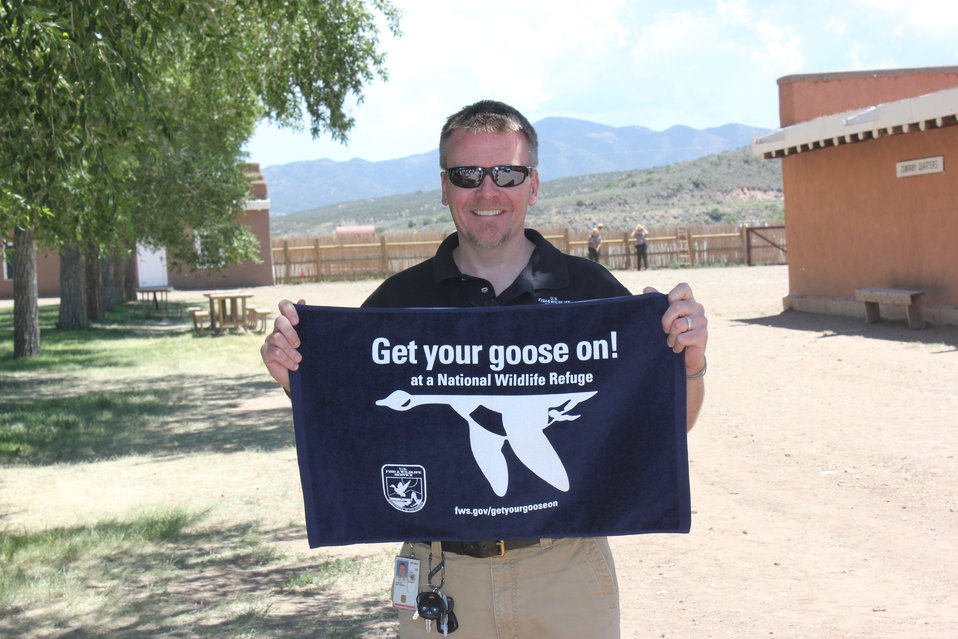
Matt Hogan, Assistant Regional Director for the National Wildlife Refuge System, Gets His Goose On!